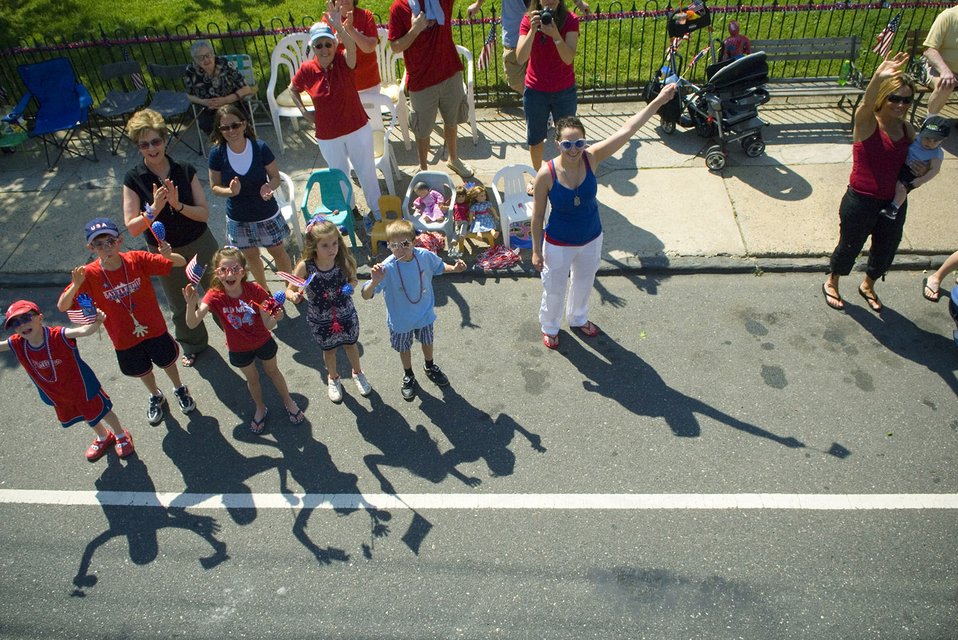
Philly Air Force Week

Residents of Bridesburg, Pa., cheer and take pictures of Airmen participating in the Bridesburg Memorial Day Parade May 26. Bridesburg is a borough in Philadelphia and hosted the kickoff celebrations for Air Force Week Philadelphia. Air Force Week Philadelphia is an event designed to build new relationships in the Philadelphia metropolitan area and strengthen public support for the Air Force mission and Airmen serving worldwide in the war on terrorism.